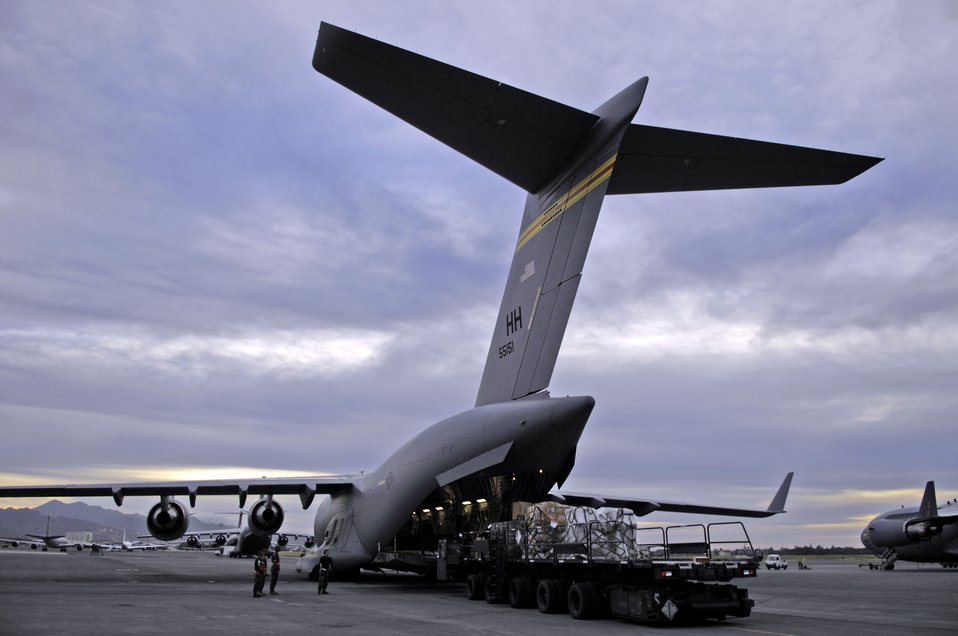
Sound support

Pallets of equipment are loaded on a C-17 Globemaster III at Hickam Air Force Base, Hawaii, Nov. 29 for a mission to Vietnam. The mission includes the transport of Joint POW/ MIA Accounting Command members and deliver two ultrasound units to Thuy Duong Village, Vietnam.